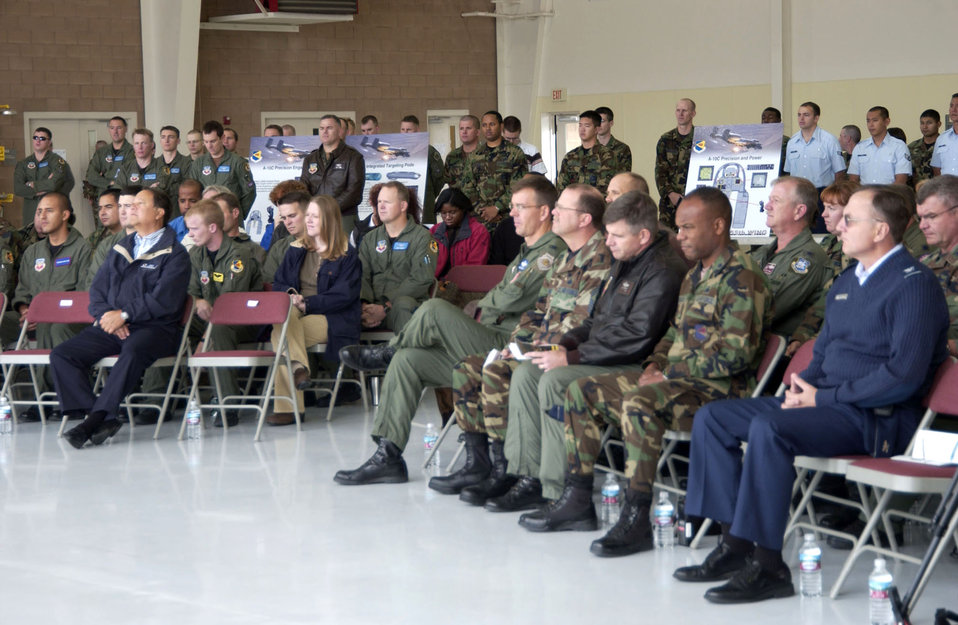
Enhanced A-10 arrives at Davis-Monthan

Airman at Davis-Monthan Air Force Base, Ariz., and members of the local community welcome a newly modified A-10C Thunderbolt II during a roll-out ceremony there Nov. 29. The A-10 has been modified with precision engagement technology to create the new and improved A-10C. The enhancements include full integration of sensors, multi-functional color displays and a new hands-on-throttle-and-stick interface.